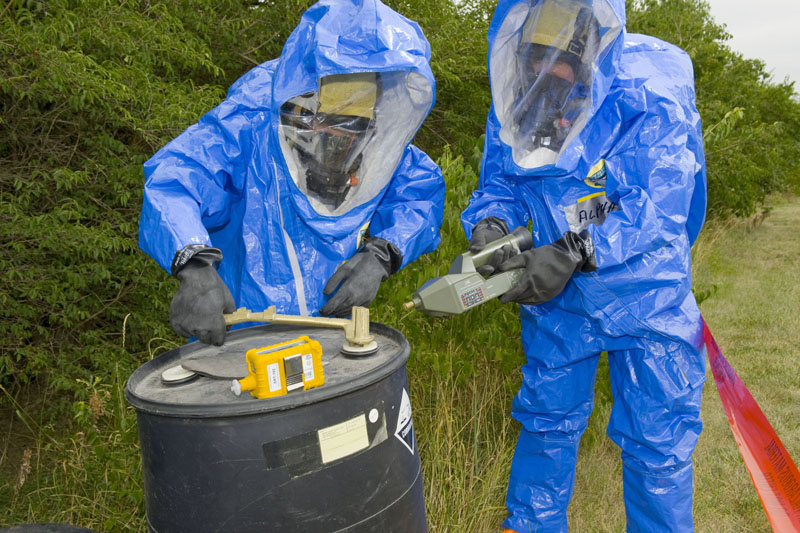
Decontamination RespSimulation:testing suspected hazardous site for chemical and biological agents. Cincinnati, 2008 USEPA Photo by Eric Vanceonse Team